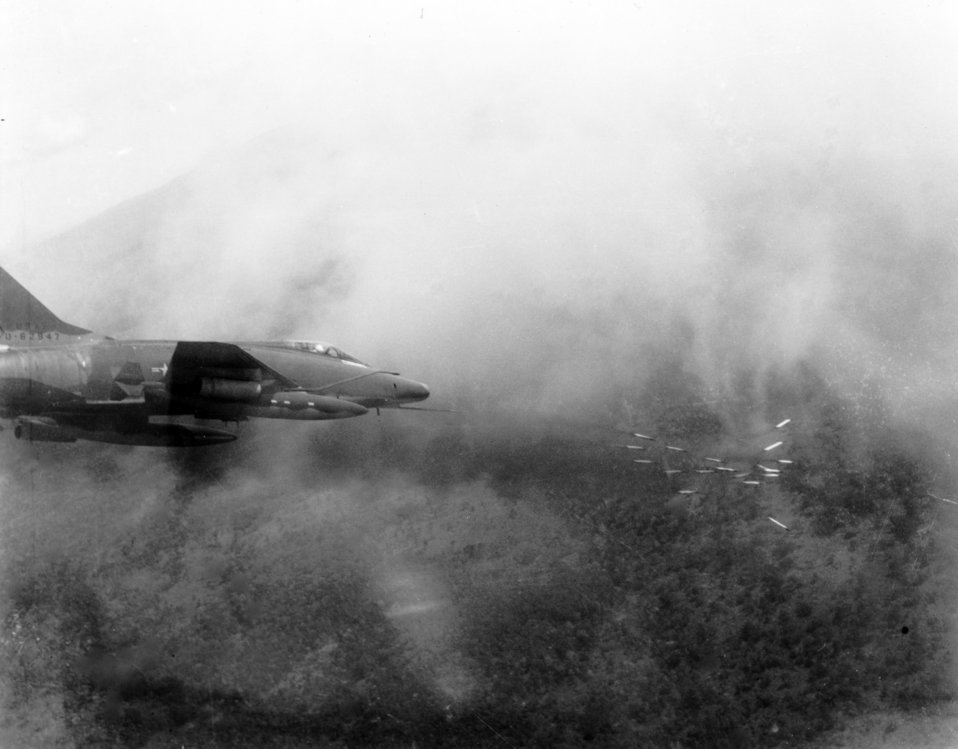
F-100

1960's -- South Vietnam -- An Air Force F-100 Super Sabre fires a salvo of rockets at a jungle target. May 1967 Air Force Photo